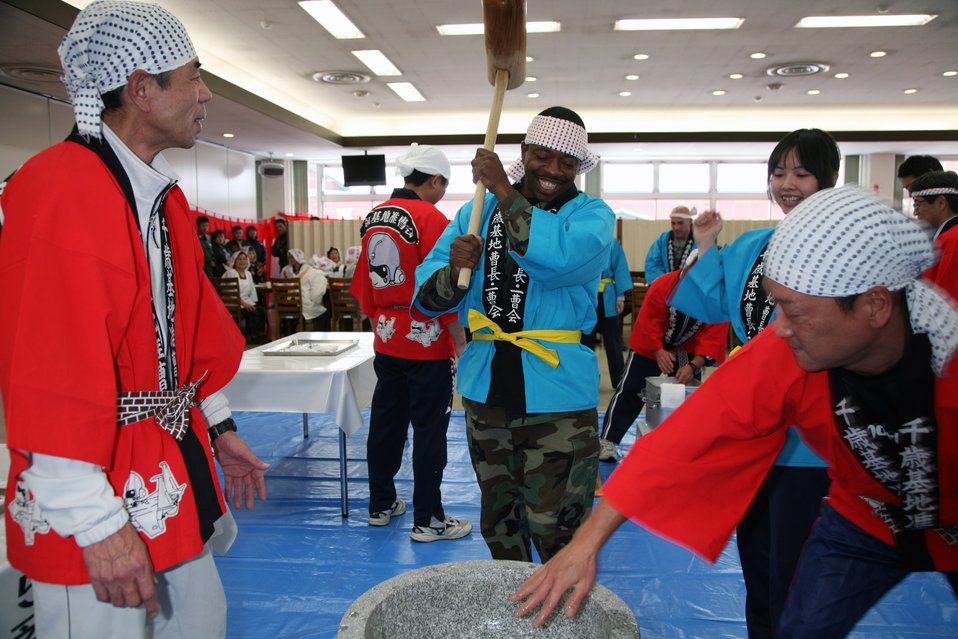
Kadena Airmen participate in Japanese cultural ceremony

Senior Master Sgt. Tony Mills takes a turn pounding rice during a traditional Japanese New Year Mochitsuki ceremony Dec. 12 at the Japan Air Self Defense Force's Chitose Air Base. Sergeant Mills is assigned to the 13th Air Force, Det. 1. He and about 70 Airmen from the 18th Wing participated in a bilateral training event with the JASDF's 2nd Air Wing as part of the Aviation Training Relocation program.